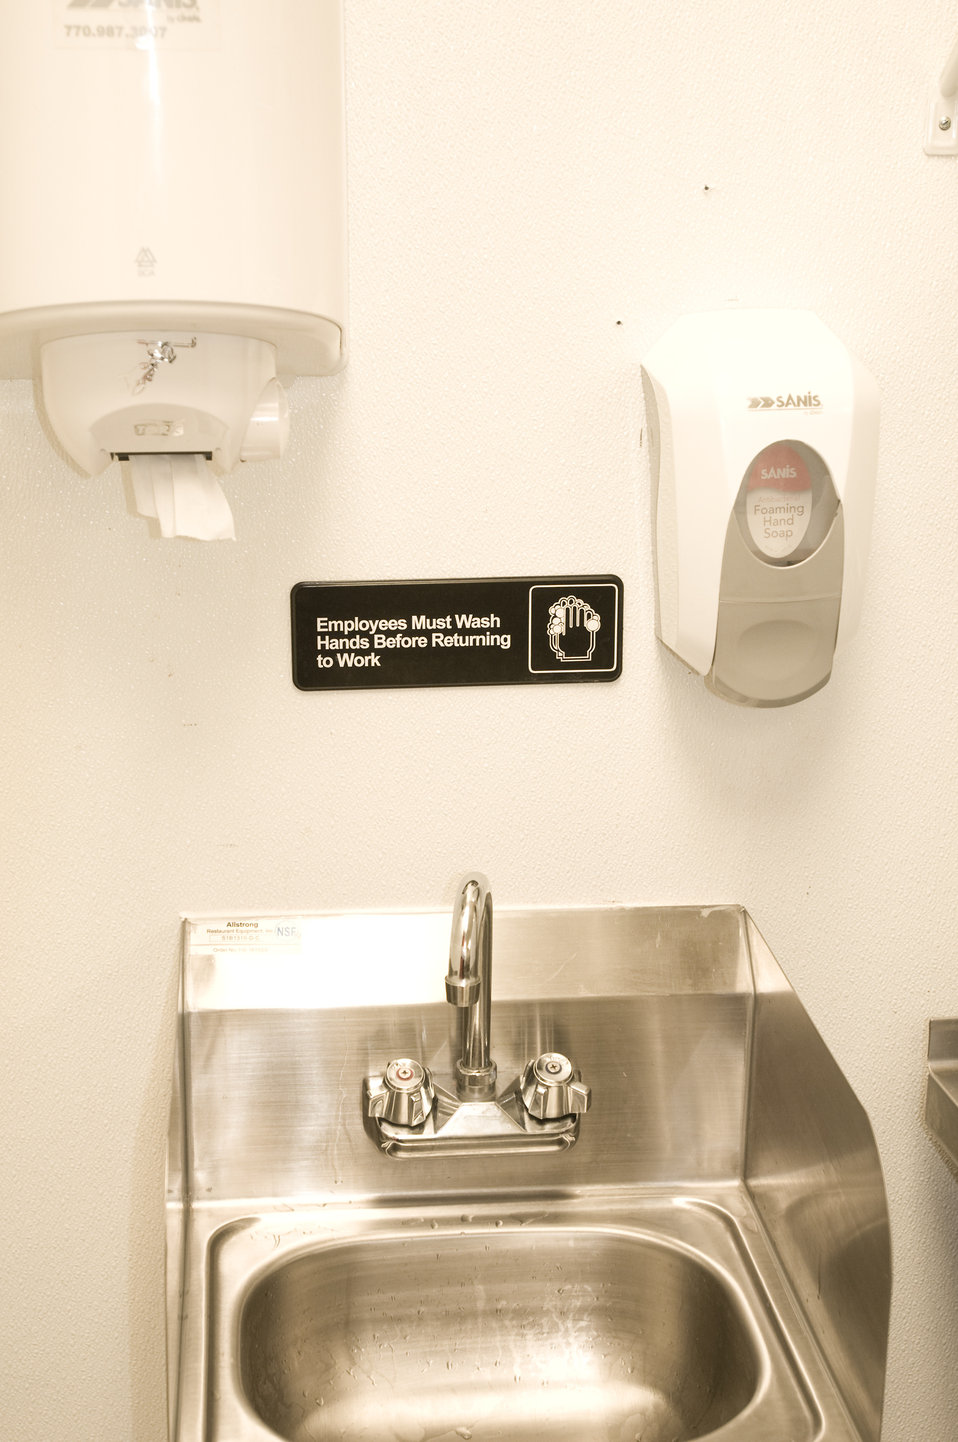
This image depicts the interior of a bathroom's sink area, and included the foaming hand soap dispenser above the sink to the right, and to the left, the paper towel dispenser. In between the two, adhered to the wall, was a sign which read 'Employees Must Wash Hands Before Returning to Work', and included a simple graphic depicting two hands creating suds, as they scrubbed one another.